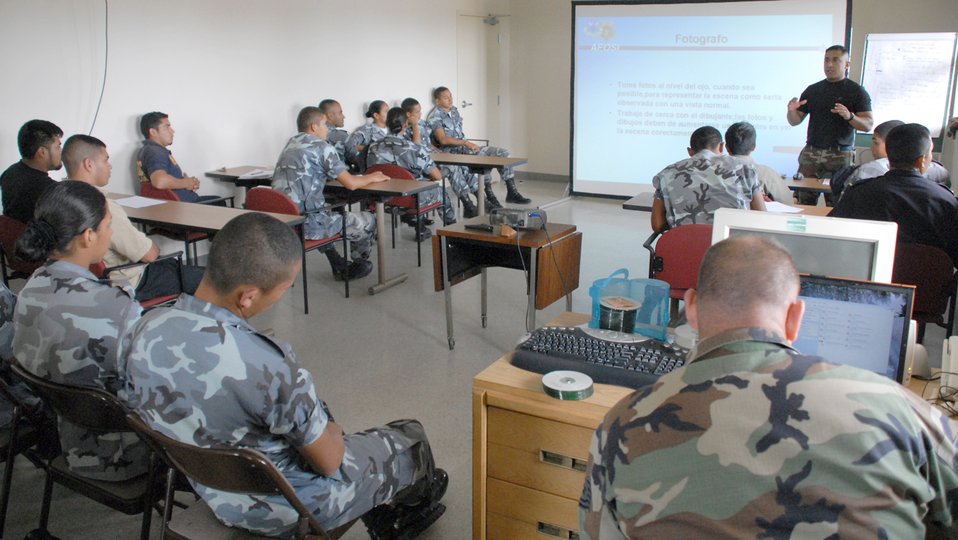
CSI Honduras: JSF teaches crime scene processing to Honduran police

Staff Sgt. Edgar Castro, joint security forces, reviews crime scene procedures with police from nearby Comayagua and La Paz police divisions, as well as cadets from the La Paz Police Academy. The course is one in a series of classes taught this year, with other lessons involving handcuff procedures, high-risk traffic stops and riot control.